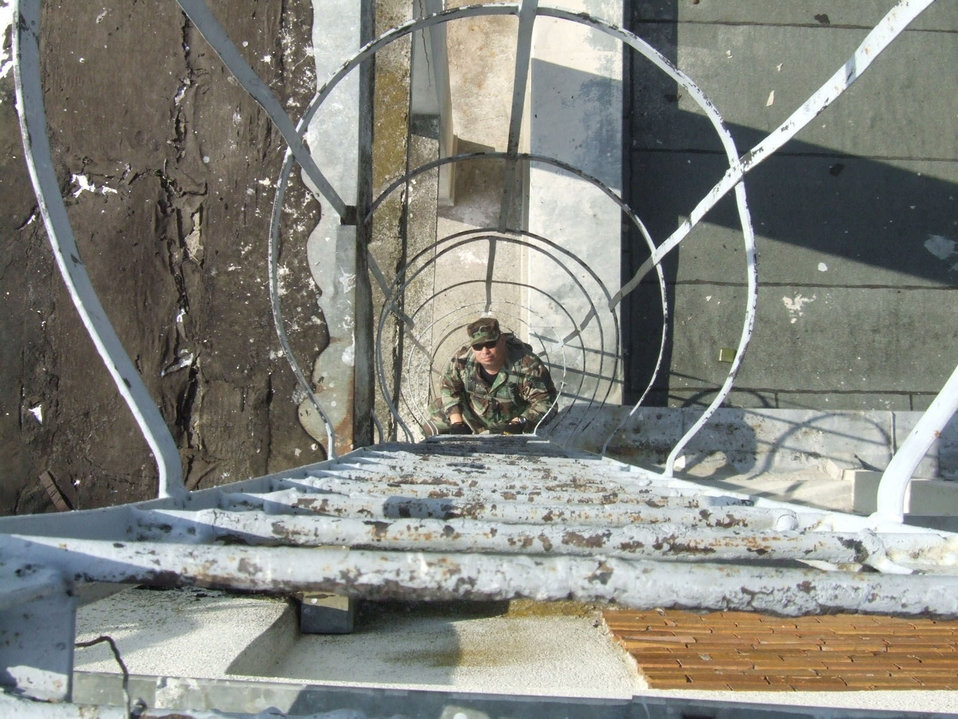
Comm team keeps Viper Lance participants connected

Staff Sgt. Frank Chedester climbs down from the roof of a maintenance hangar at Mihail Kogalniceanu Air Base, Romania, after setting up wireless links here Aug. 6 to support Exercise Viper Lance 2006. Sergeant Chedester is a data technician with the 1st Combat Communication Squadron from Ramstein Air Base, Germany.